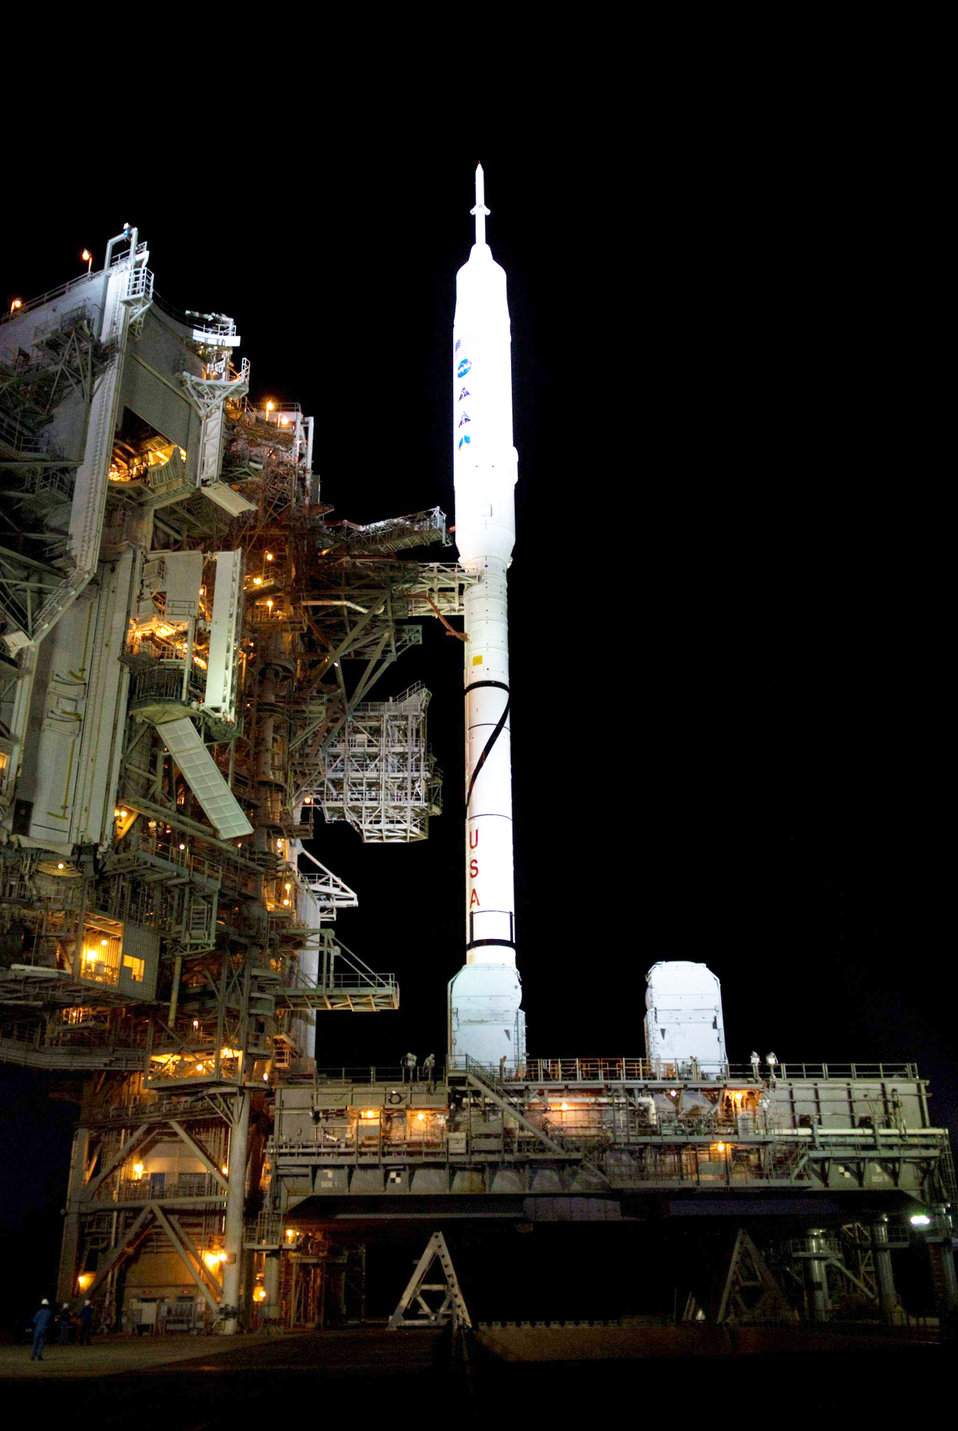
Ares I-X test rocket launched

As nightfall comes to Launch Complex 39B at NASA's Kennedy Space Center in Florida, xenon lights reveal the Ares I-X rocket awaiting the approaching liftoff of its flight test. This is the first time since the Apollo Program's Saturn rockets were retired that a vehicle other than the space shuttle has occupied the pad. The rocket eventually was launched Oct. 28, 2009